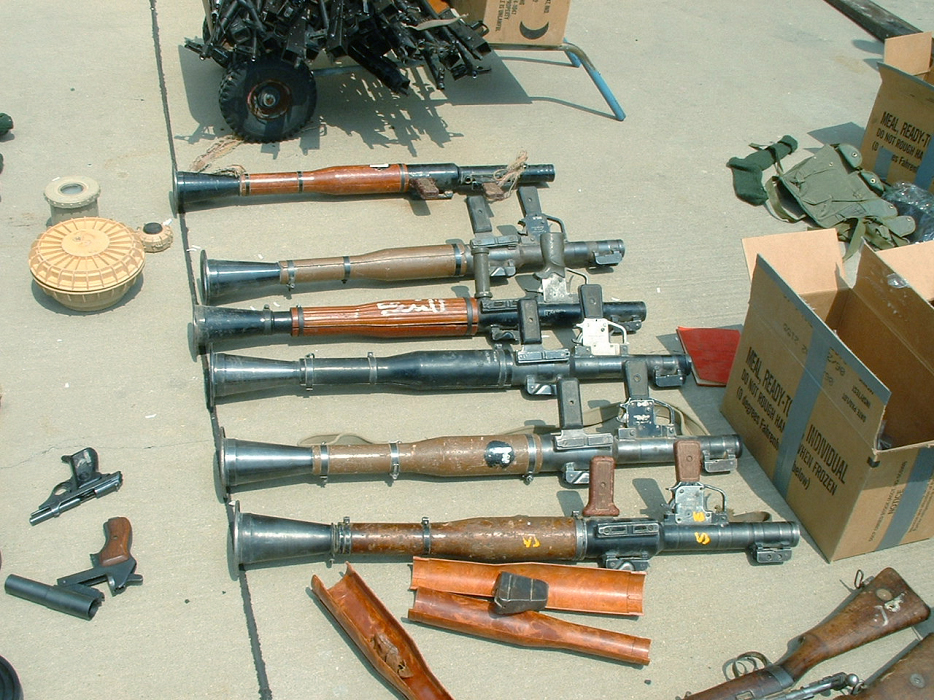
Suspected contraband

EGLIN AIR FORCE BASE, Fla. - Officials have preferred charges against Maj. Gregory McMillion after an investigation found evidence he allegedly shipped contraband items here from an Operation Iraqi Freedom deployment. The suspected contraband includes rocket-propelled grenade launchers. Major McMillion is assigned to the base's 728th Air Control Squadron.